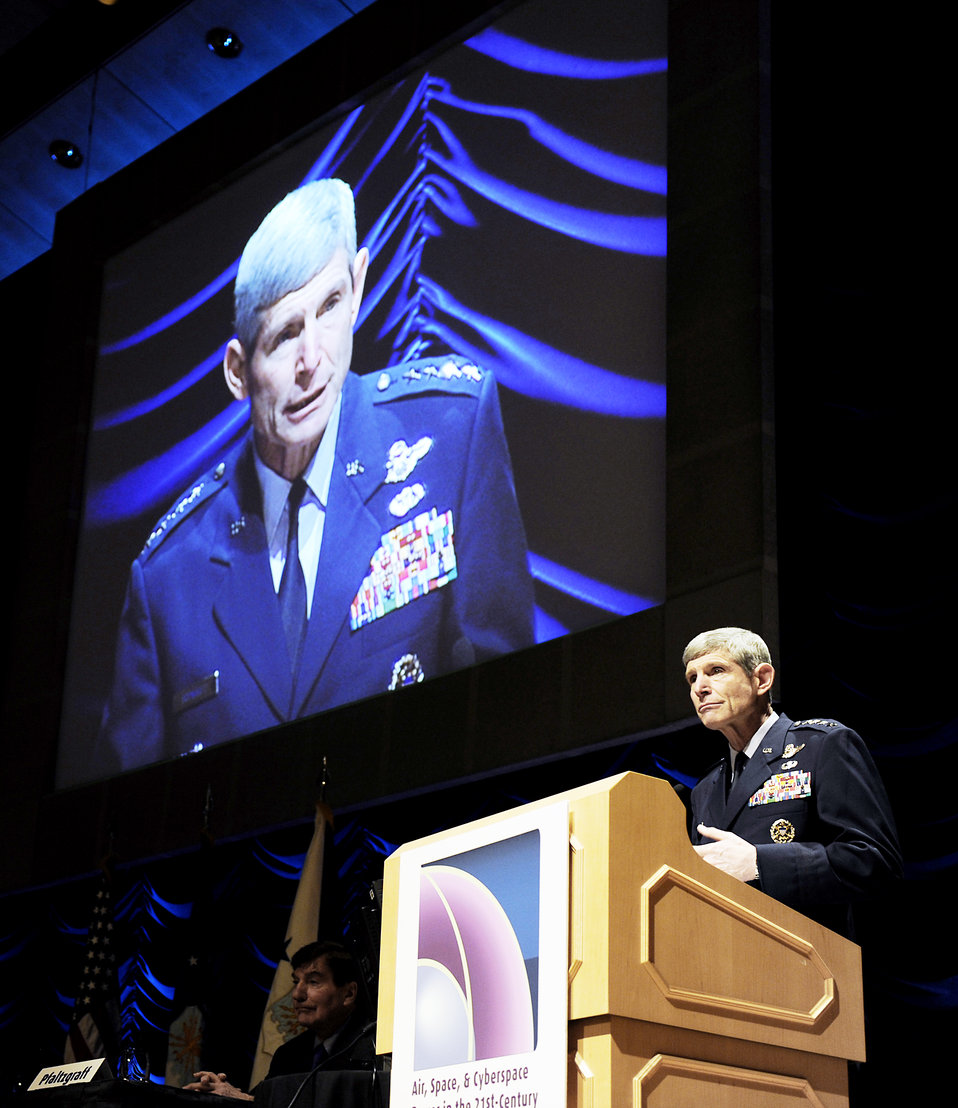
CSAF addresses senior leaders at conference

Air Force Chief of Staff Gen. Norton Schwartz addresses senior-level officials, senior military sister service officials, foreign military officers, leaders in academia and science and other distinguished visitors Jan. 20, 2010, during the 38th Institute for Foreign Policy Analysis-Fletcher Conference on National Security, Strategy and Policy in Washington, D.C. During his presentation he spoke about air, space and cyberspace power in the 21st century.